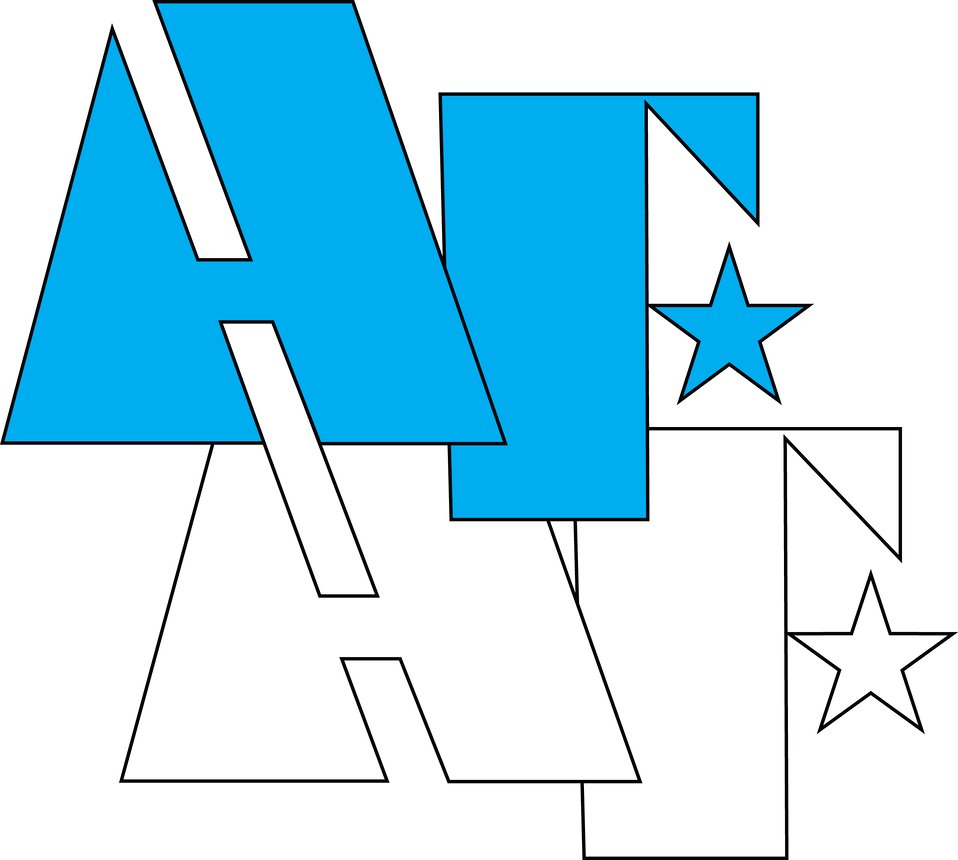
AFAF 2007 campaign begins Feb. 12

The Air Force Assistance Fund supports four official Air Force charities: The Air Force Aid Society, the Air Force Enlisted Village Indigent Widows' Fund, the Air Force Village Indigent Widows' Fund and the General and Mrs. Curtis E. LeMay Foundation.